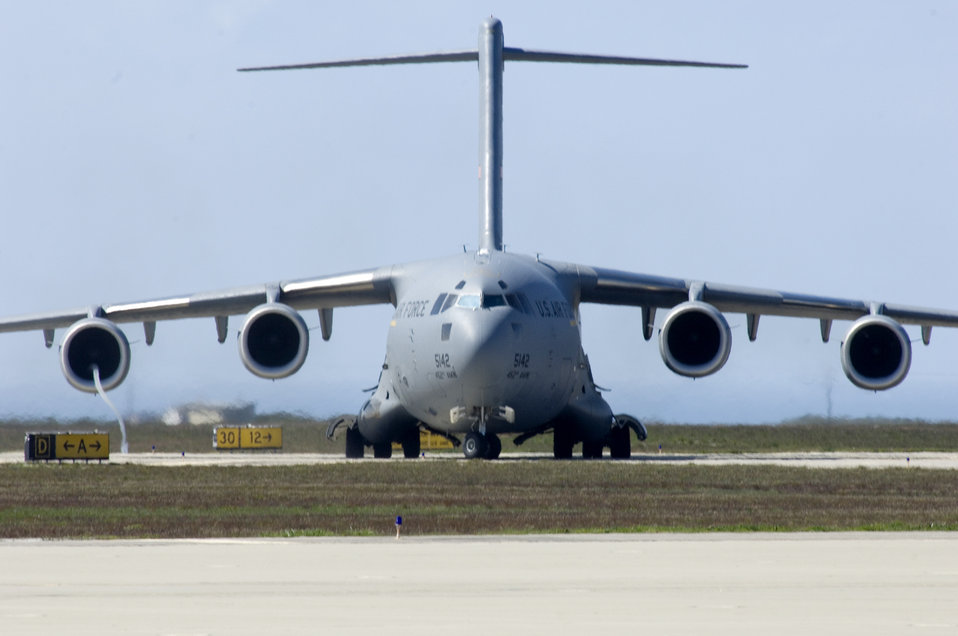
Watch me reverse

A C-17 Globemaster III, stationed at March Air Reserve Base, Calif., performs a reverse thrust maneuver for training at Vandenberg Air Force Base, Calif., March 9, 2010. A thin water vapor vortex appears on the far left engine.